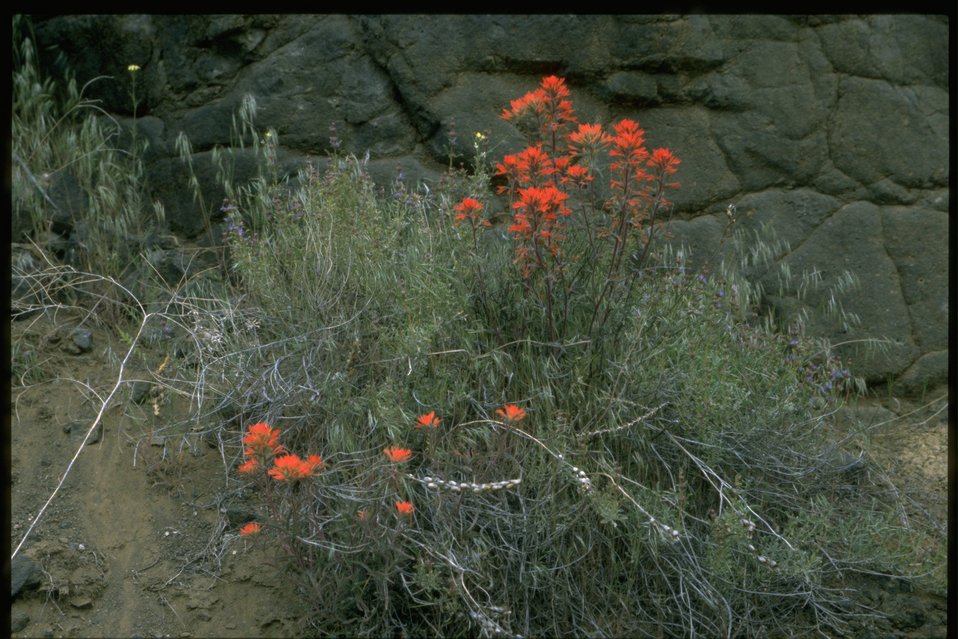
Medium shot of Indian Paintbrush (Castilleja linariaefolia) against black rocks.